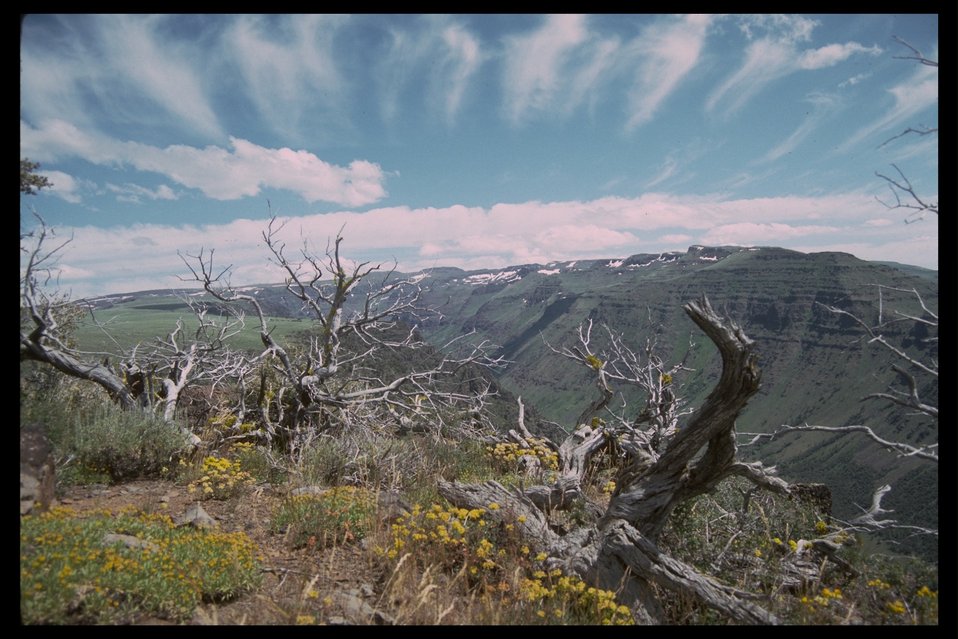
High Steens looking north at Big Indian Gorge taken near Rooster Comb. (WSA 2-85F)